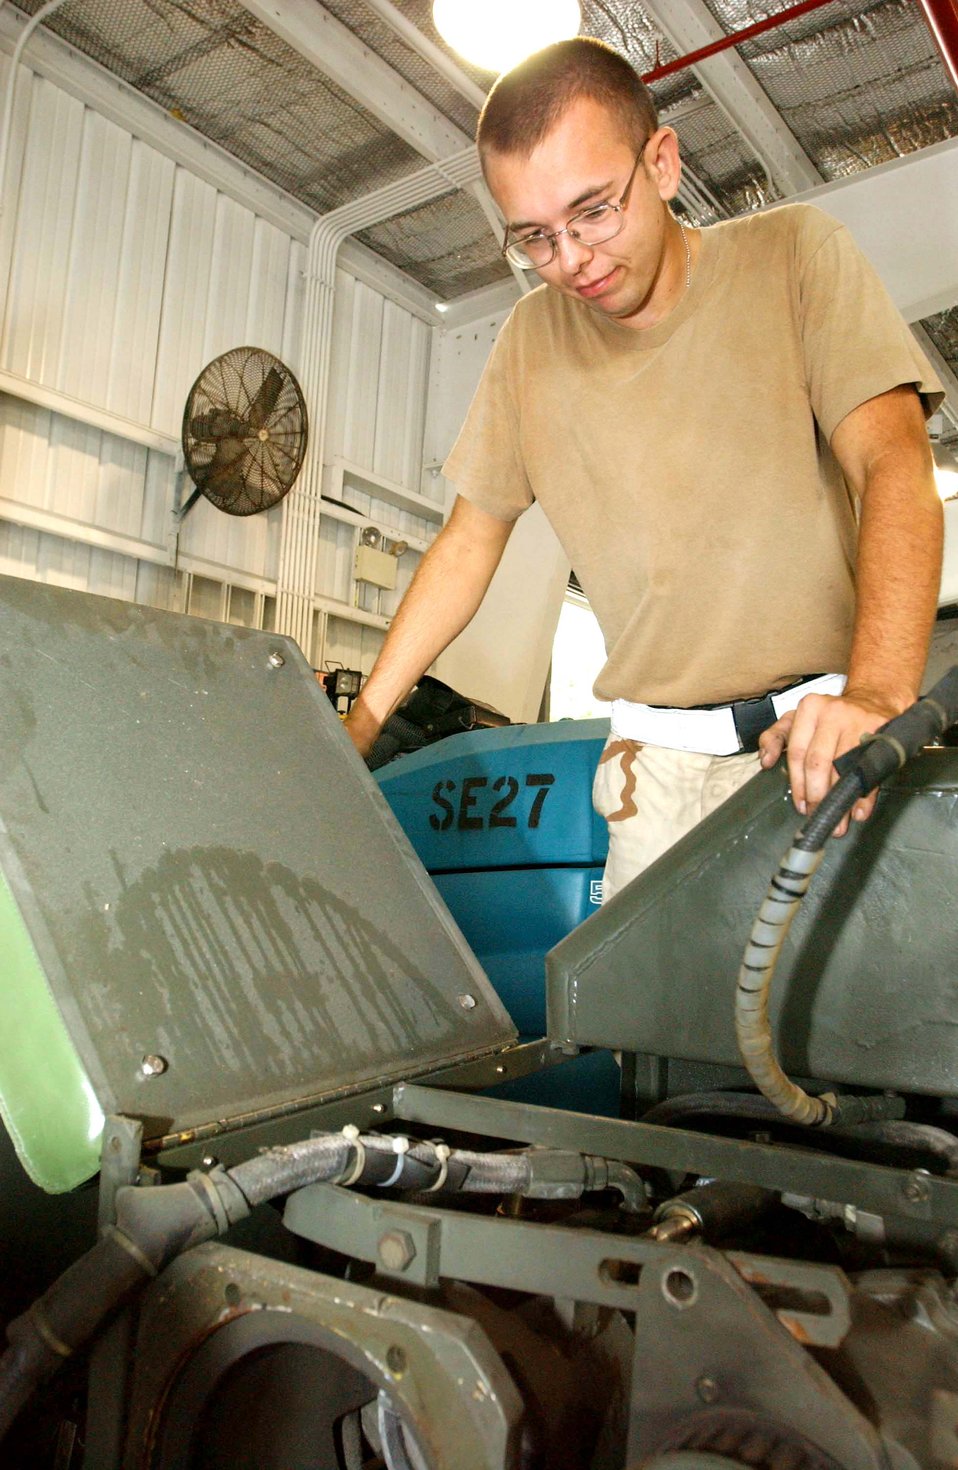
Airmen keep ground equipment working, mission flying

OPERATION ENDURING FREEDOM -- Airman 1st Class Jerred Goodroad inspects a bomb-lift vehicle scheduled for an engine swap at a forward-deployed location. He is an aerospace ground equipment mechanic with the 40th Expeditionary Maintenance Squadron deployed from Minot Air Force Base, N.D.